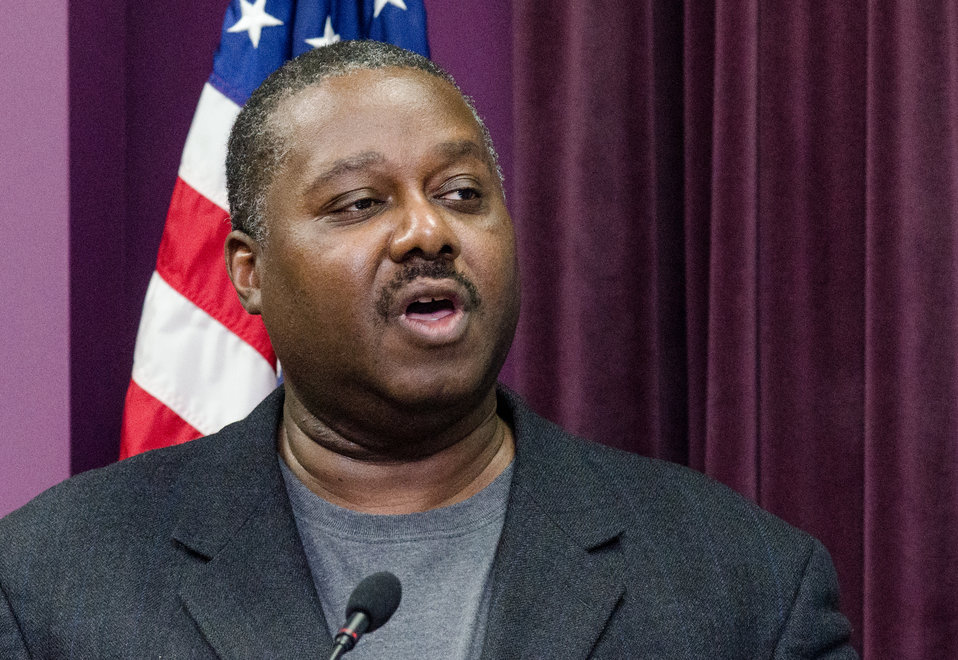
U.S. Department of Agriculture (USDA) Risk Management Agency Civil Rights and Community Outreach Staff Eastern Outreach Specialist Ron Brown, talked with farmers and other staffers participating in the “Virginia State University (VSU), USDA and Virginia Farmers Working Together” outreach workshop in the VSU, L. Douglas Wilder building on Thursday, March 7, 2013, in Petersburg, VA. Farmers shared and learned new ways to do more with USDA services, and how to apply for programs that will help grow their business.